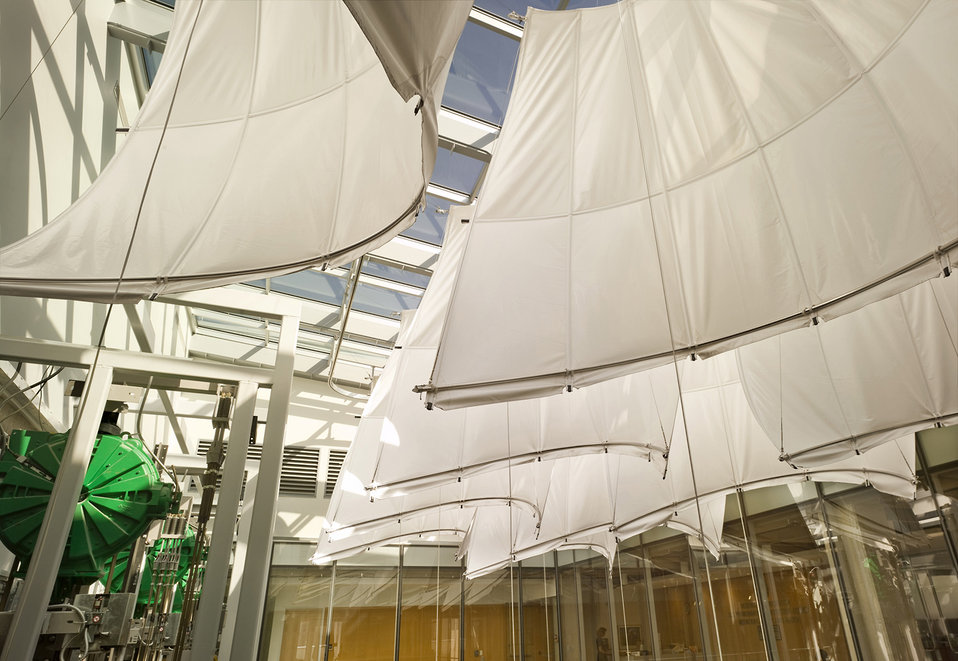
Sails in the atrium reflect light downward and enhance day lighting throughout the interior of the building.

To find out more about the Region 8 green building: www.epa.gov/region8/building/

To find out more about the Region 8 green building energy savings: www.epa.gov/region8/building/energy.html